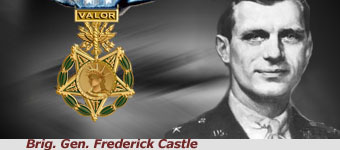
Brig. Gen. Frederick Castle

For his bravery, Brig. Gen. Frederick Castle was awarded the Medal of Honor, the nation's highest military decoration, during a mission over Belguim in December 1944.